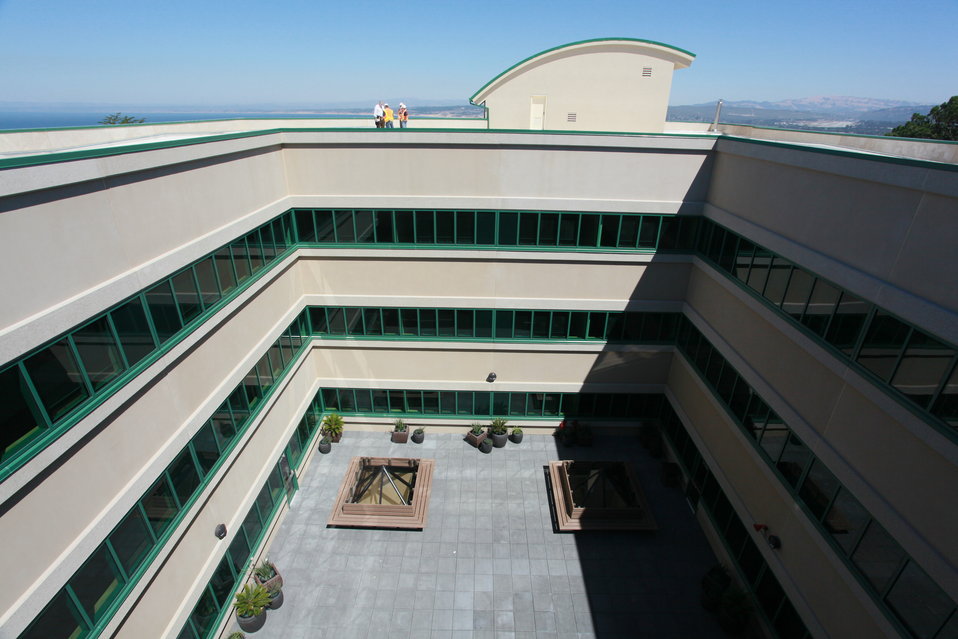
MONTEREY, Calif. (Sept. 21, 2010) - Rising above the hills of the Presidio of Monterey is the Defense Language Institute’s new general instruction building (GIB), completed in September by the U.S. Army Corps of Engineers Sacramento District.

The $28 million building will house 60 classrooms for military students learning foreign languages, the first of three scheduled for Corps construction to accommodate the growing DLI.